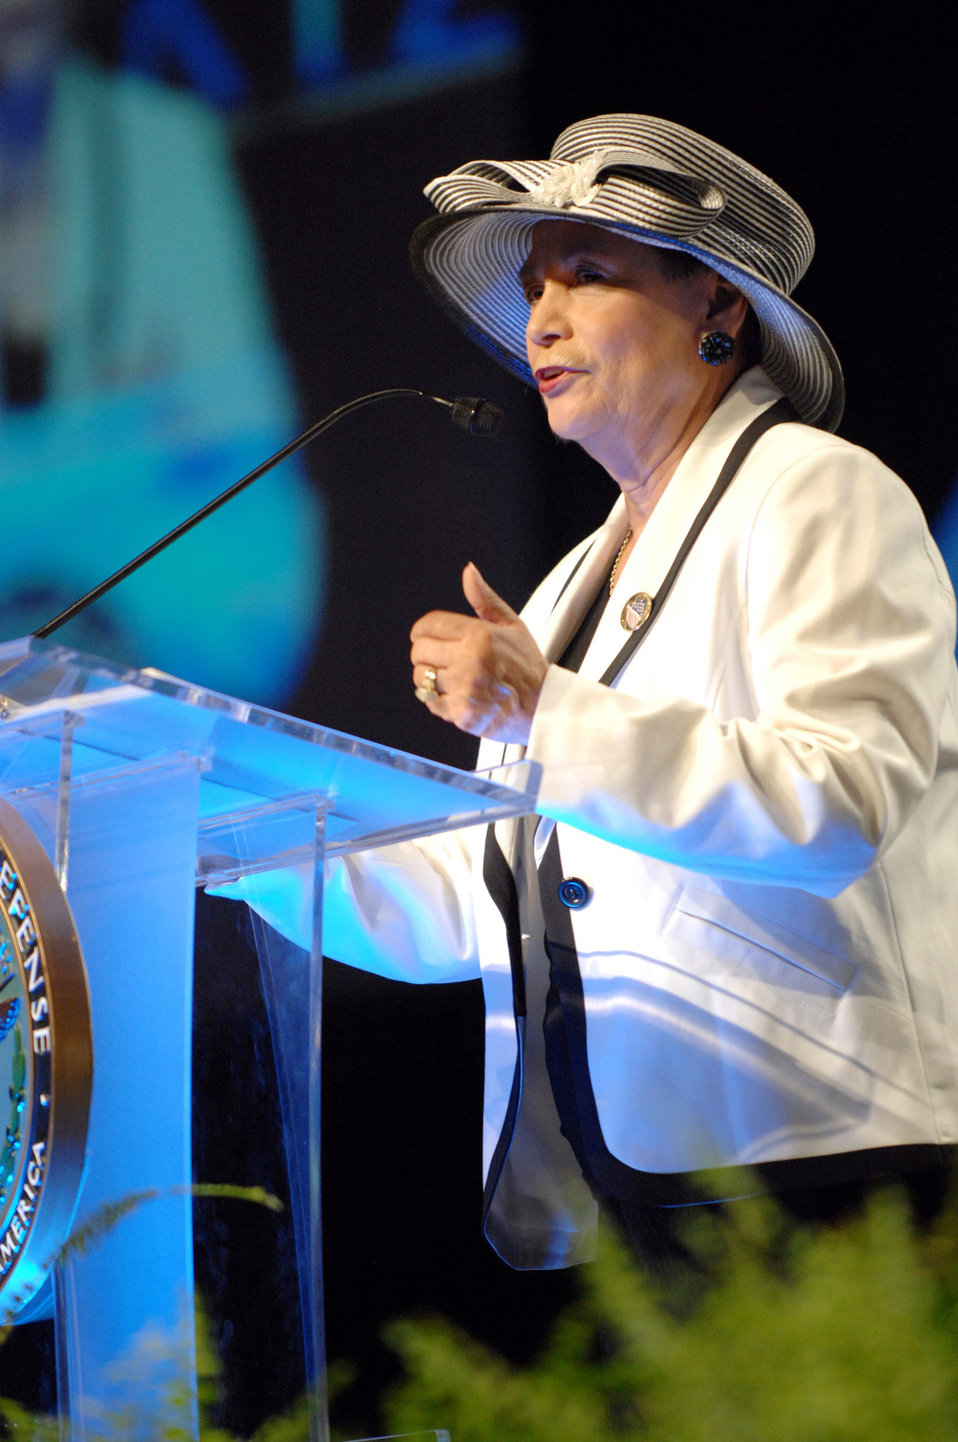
LULAC, DOD honor citizen warriors at awards breakfast

Rosa Rosales, League of United Latin American Citizens national president, addresses military members at the Department of Defense and LULAC Awards Breakfast July 16 here. LULAC is the oldest and largest Hispanic organization and has been advocating for Latinos in the U.S. for 80 years.